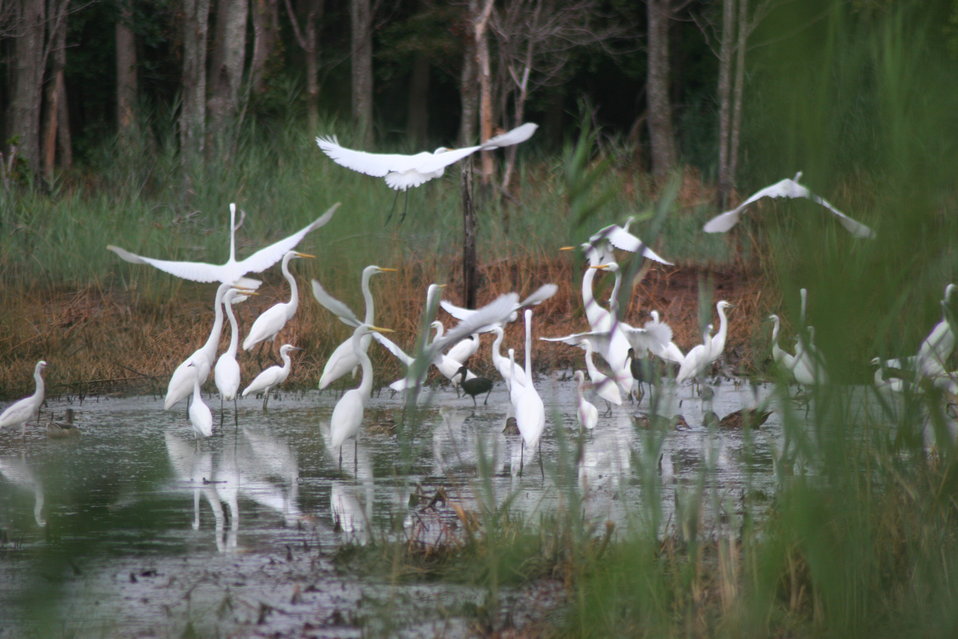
Flock of Egrets